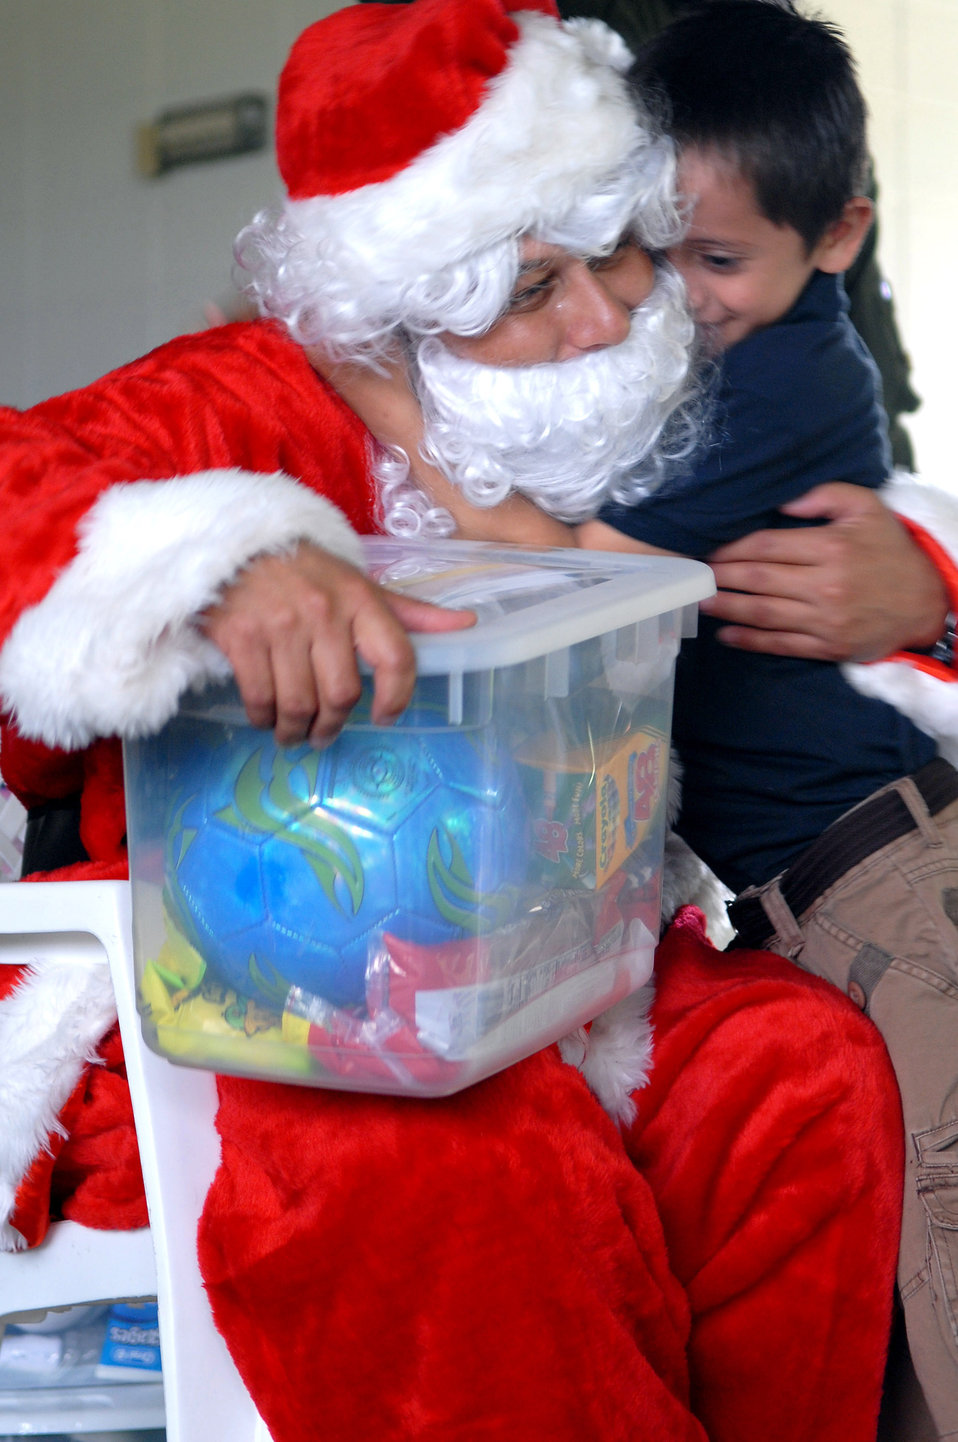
Santa pays an early visit

Santa Claus gets a hug from one of the children at the Aldea Infantil S.O.S orphanage in La Ceiba, Honduras, during